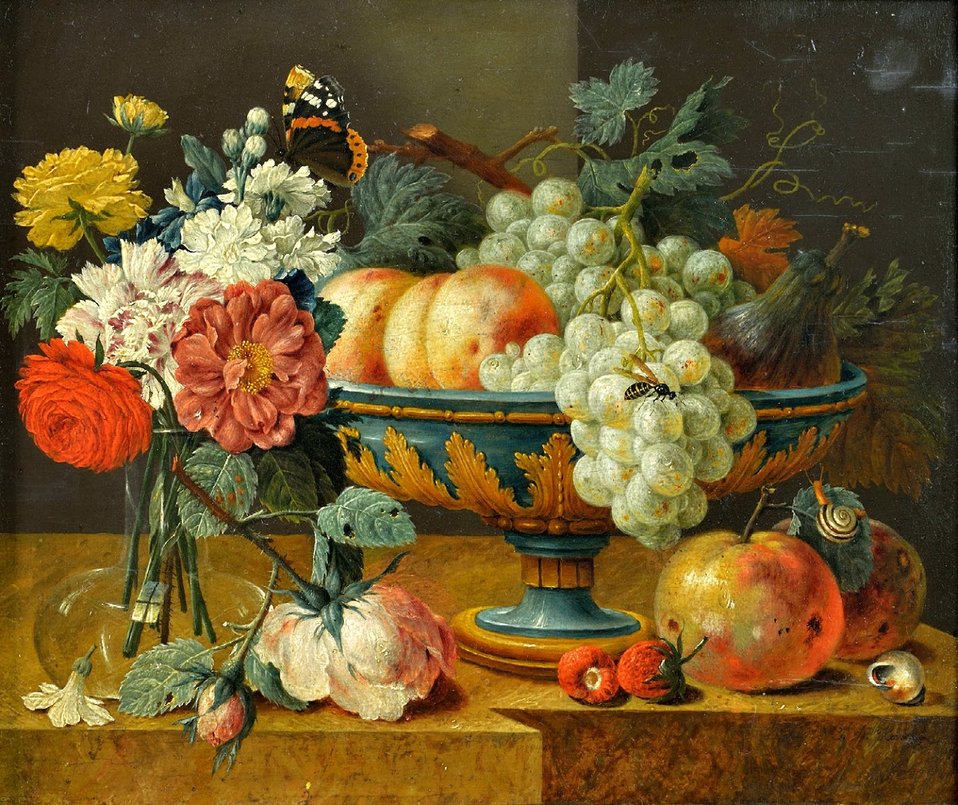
Heem Fruit bowl with flowers